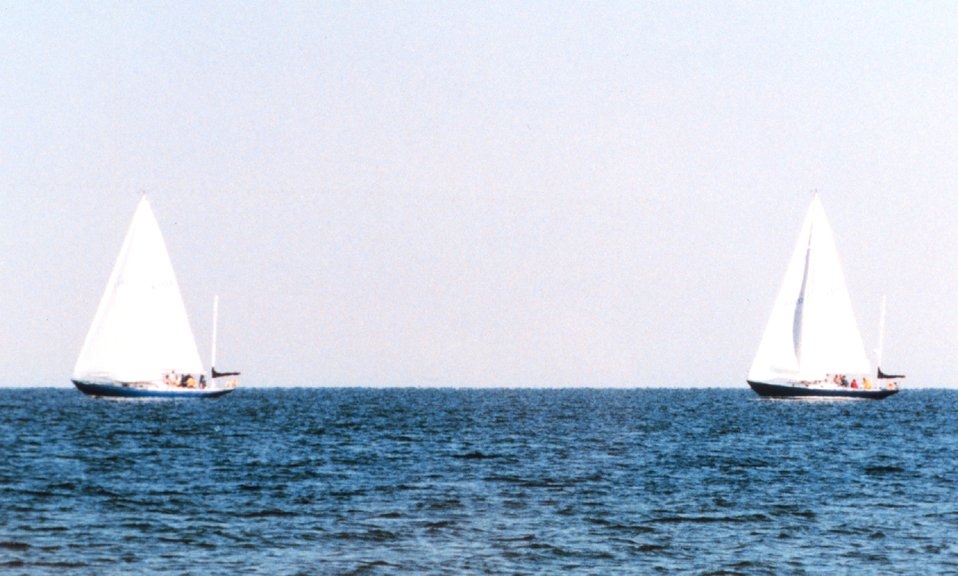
Wintertime sailing on the Patuxent River.